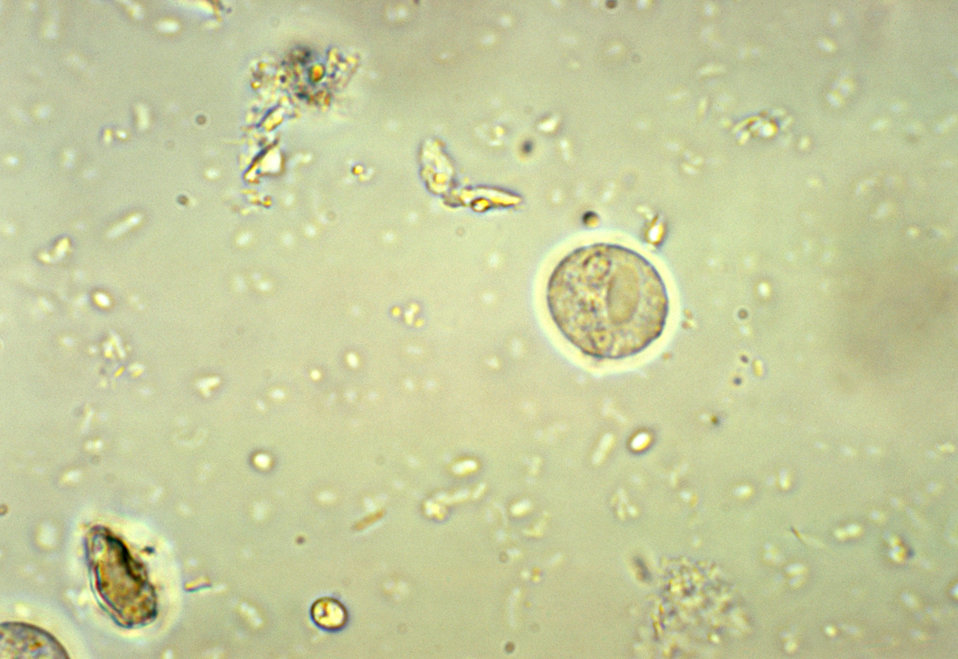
This unstained photomicrograph depicts a binucleated cyst of an Entamoeba histolytica amoebic parasite, displaying a visible chromatoid body.